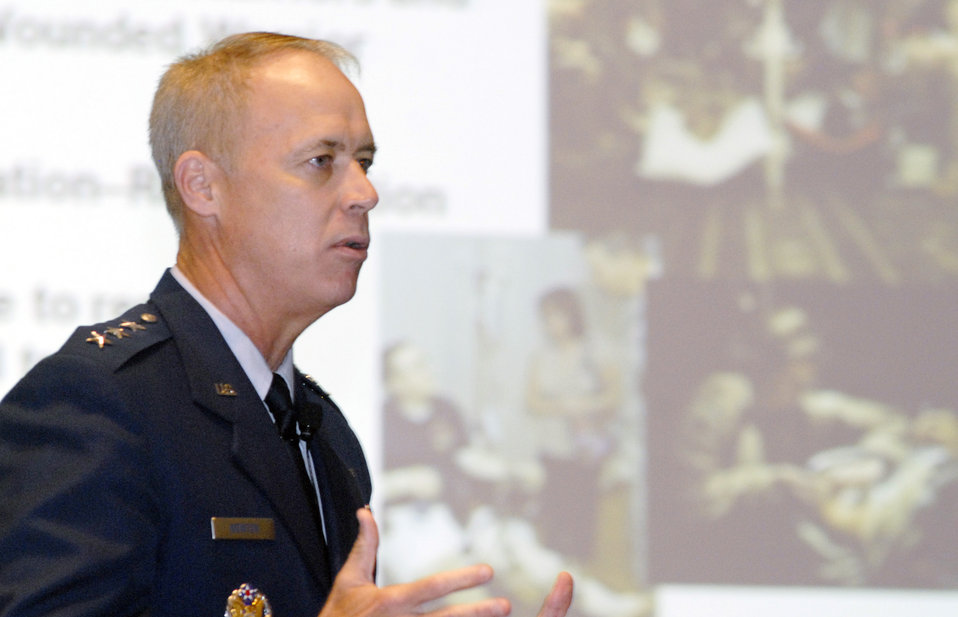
A1 addresses AFA convention

Lt. Gen. Richard Newton, deputy chief of staff for manpower and personnel, addresses conference attendees at the 2009 Air Force Association Air & Space Conference and Technology Exposition Sept. 15, 2009, in Washington D.C. During his speech, Gen. Newton discussed